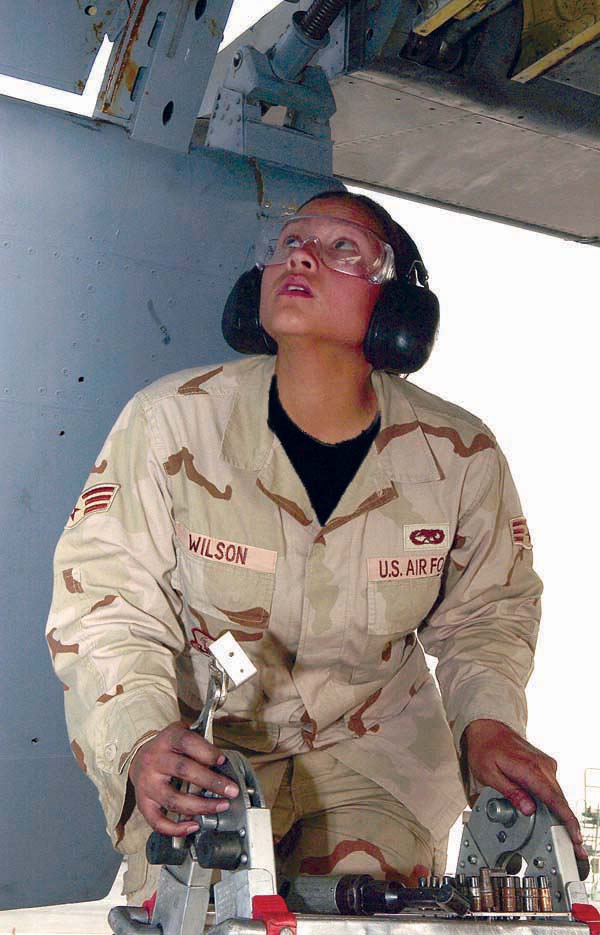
Airman keeps Air Force structures intact

SOUTHWEST ASIA -- Senior Airman Sheri Wilson replaces a cracked support bracket on a KC-135 Stratotanker. She is an aircraft structural maintenance journeyman assigned to the 379th Expeditionary Maintenance Squadron and deployed from Dyess Air Force Base, Texas.